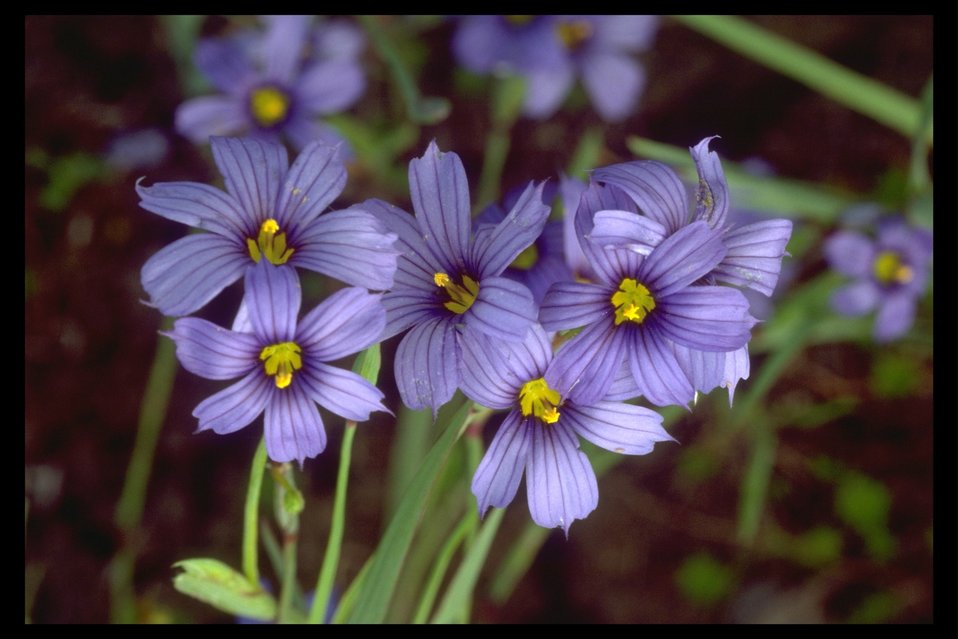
Blue-eyed Grass (Sisyrinchium bellum) found on the trailhead at Upper Table Rock.